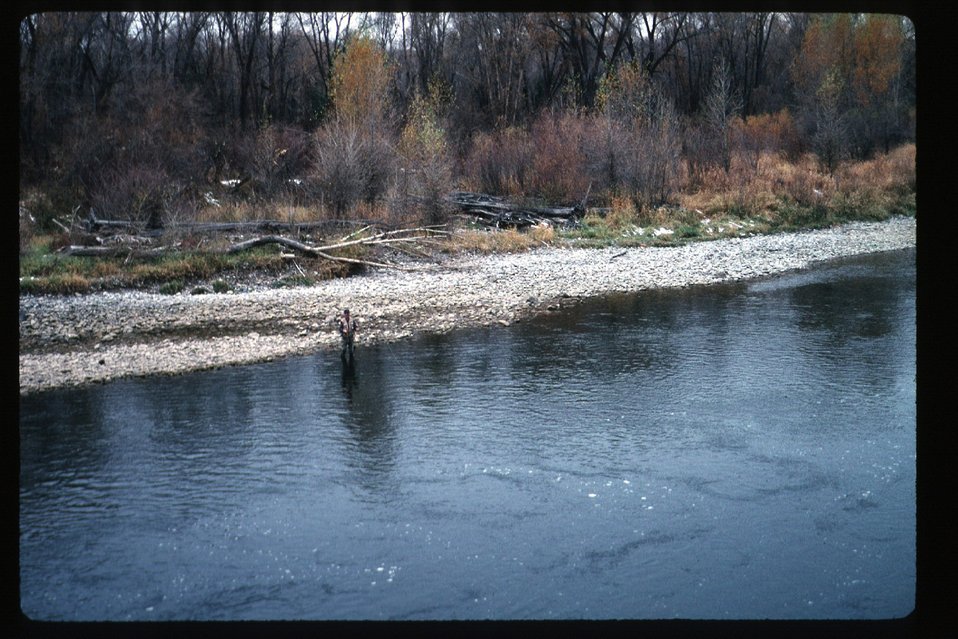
Fly Fishing South Fork of Snake River Idaho Falls Field Office USRD Upper Snake River District